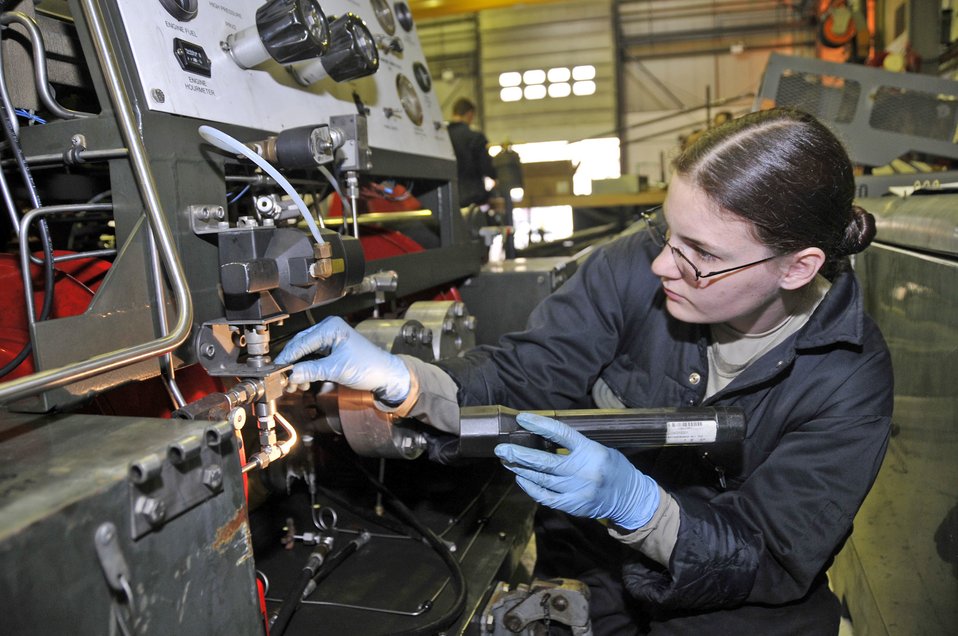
Turn on the high beam

Senior Airmen Jessica Mack performs the